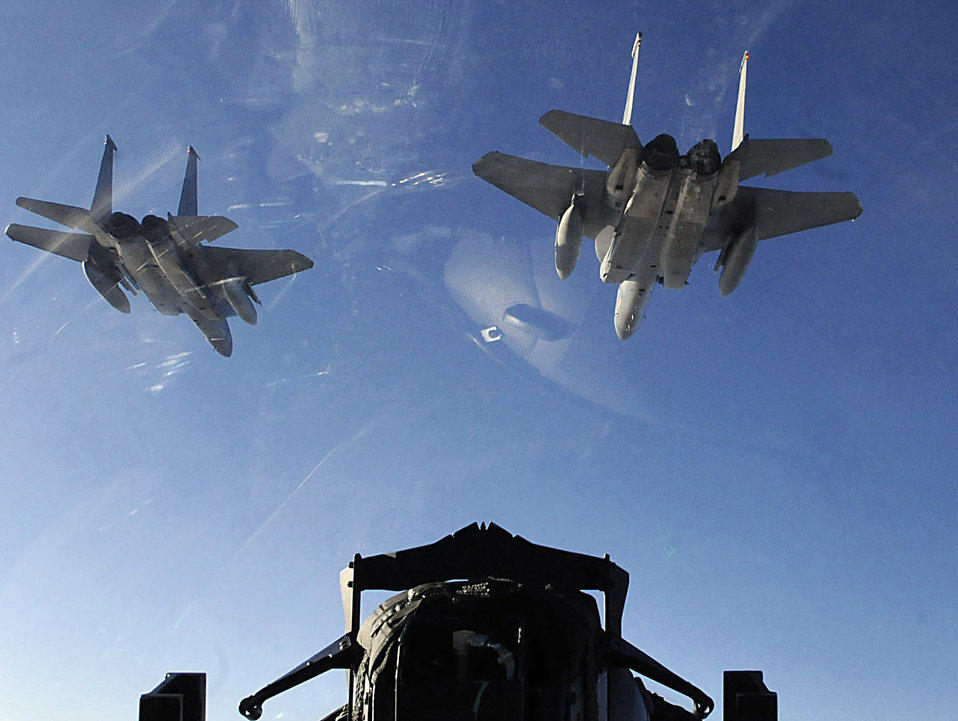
Kadena ATR

Three F-15 Eagles from the 44th Fighter Squadron train with Japan Air Self Defense Forces Nov. 17, 2010, off the coast of Hokkaido, Japan. Twelve jets and nearly 200 Airmen from Kadena Air Base, Japan, partcipated in an Aviation Training Relocation.